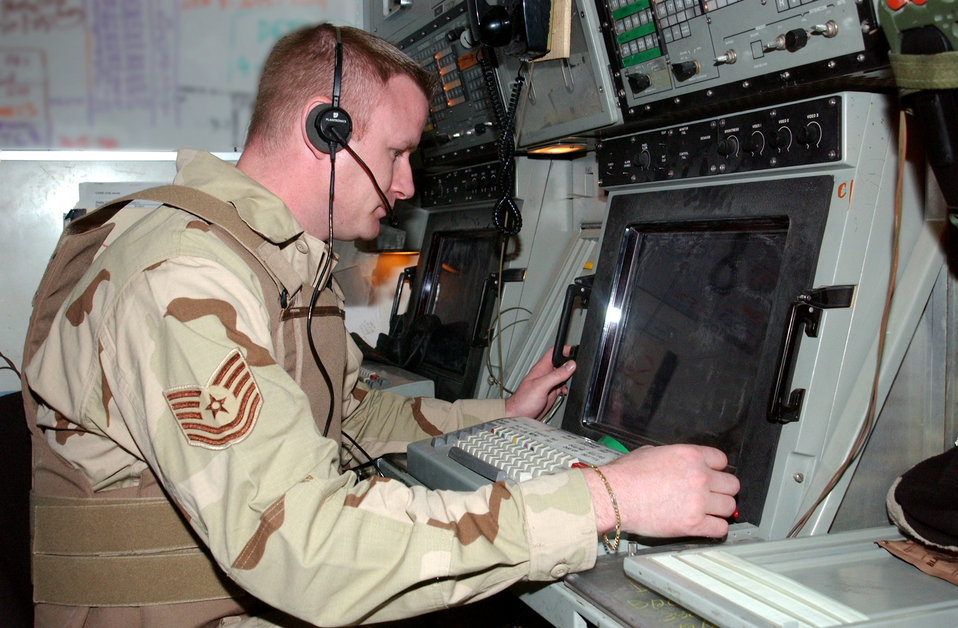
Morrison at work

OPERATION IRAQI FREEDOM -- Tech. Sgt. Mark Morrison monitors aircraft returning to a forward-deployed location following strike missions against targets in Iraq. He is an air traffic controller with the 332nd Expeditionary Operations Support Squadron and is deployed from the 46th Operations Support Squadron at Eglin Air Force Base, Fla.